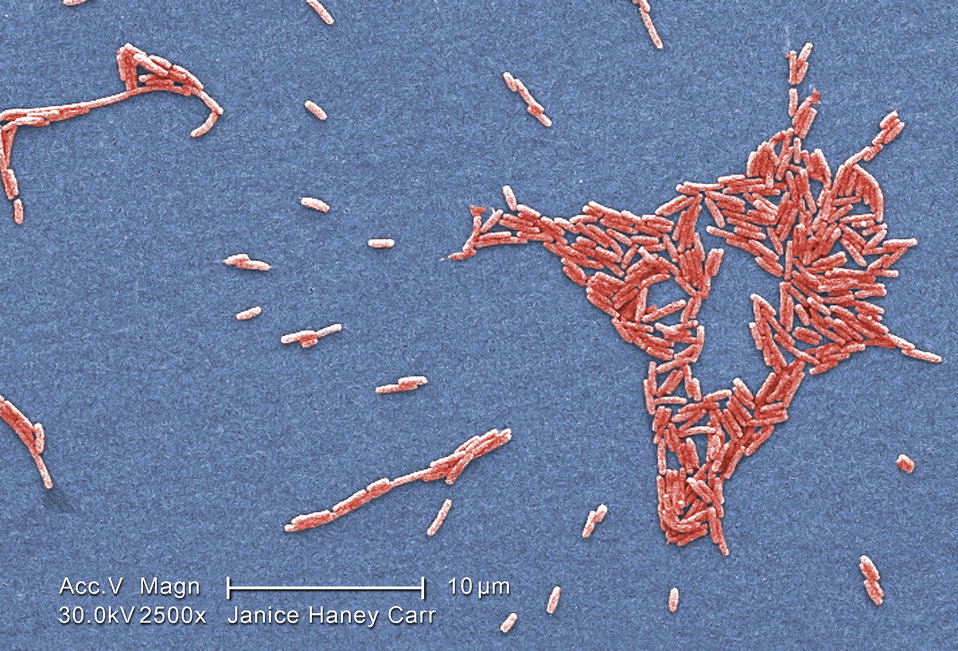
Under a moderately-high magnification of 6500X, this colorized scanning electron micrograph (SEM) depicted a scattered grouping of Gram-negative Legionella pneumophila bacteria. Please see PHIL 11092 through 11152 for additional SEMs of these organisms, specifically PHIL 11117 for a black and white version of this image. In some of these views you'll note the presence of flagellar appendages.